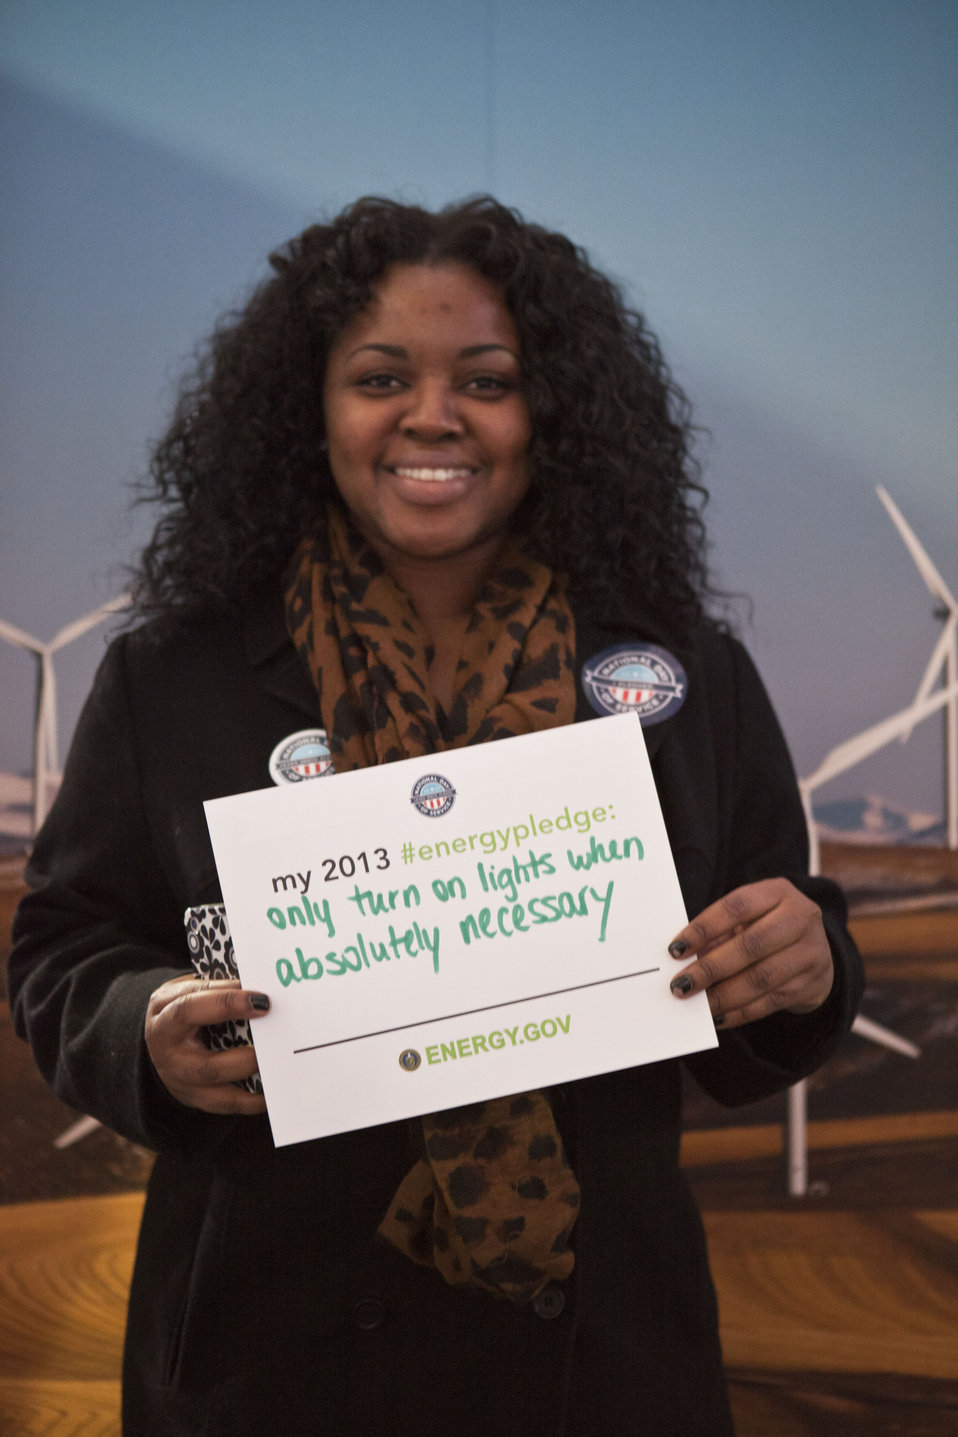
What's your #energypledge?